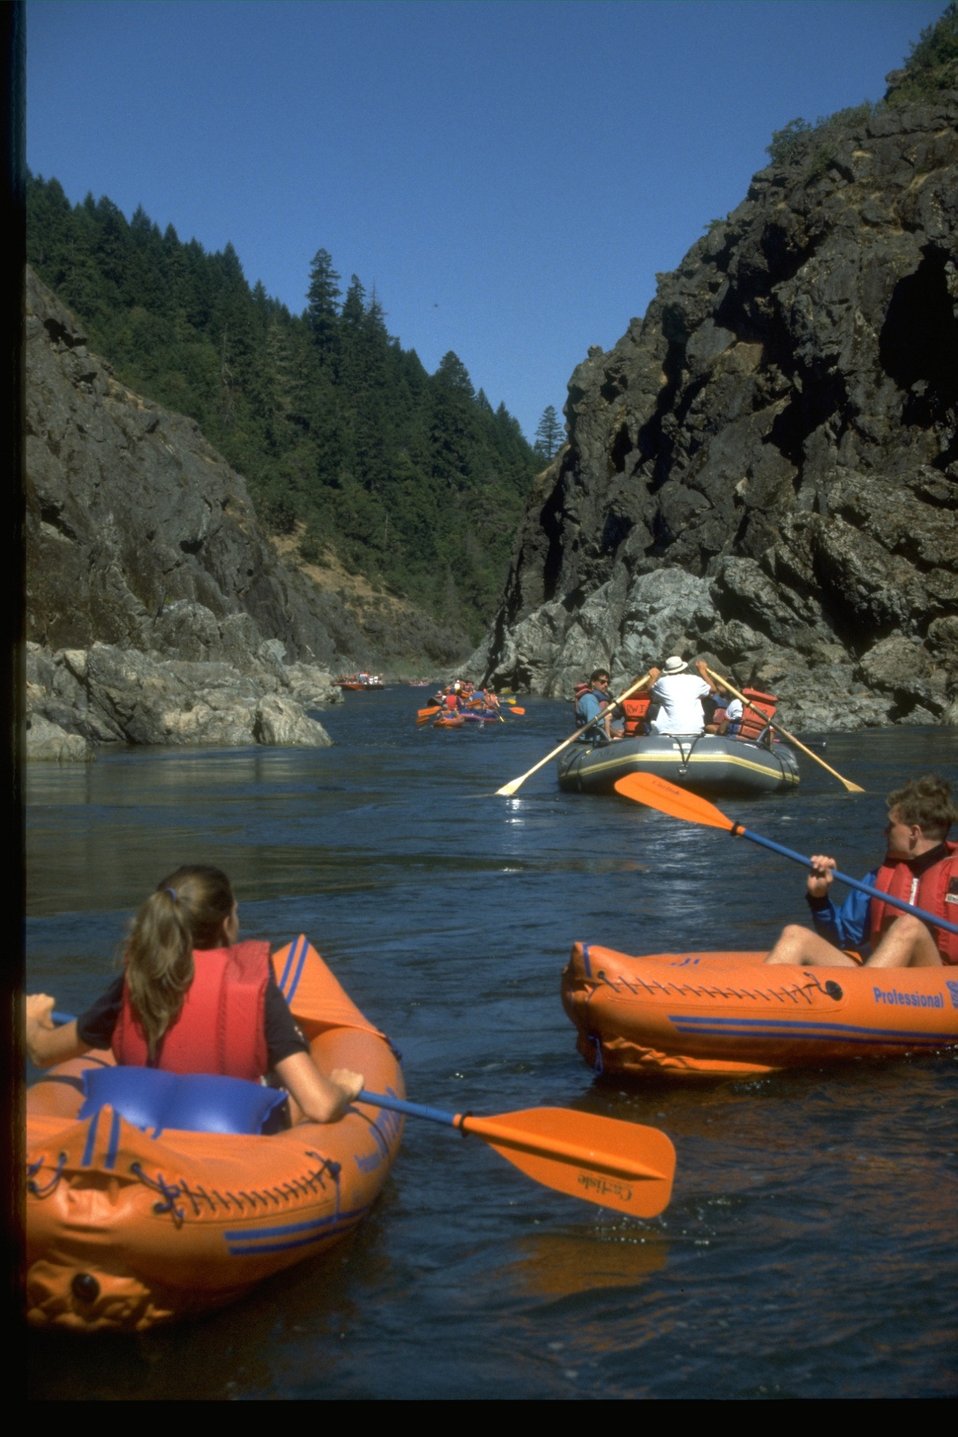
Rafting through the Hellgate Canyon on the Rogue River.